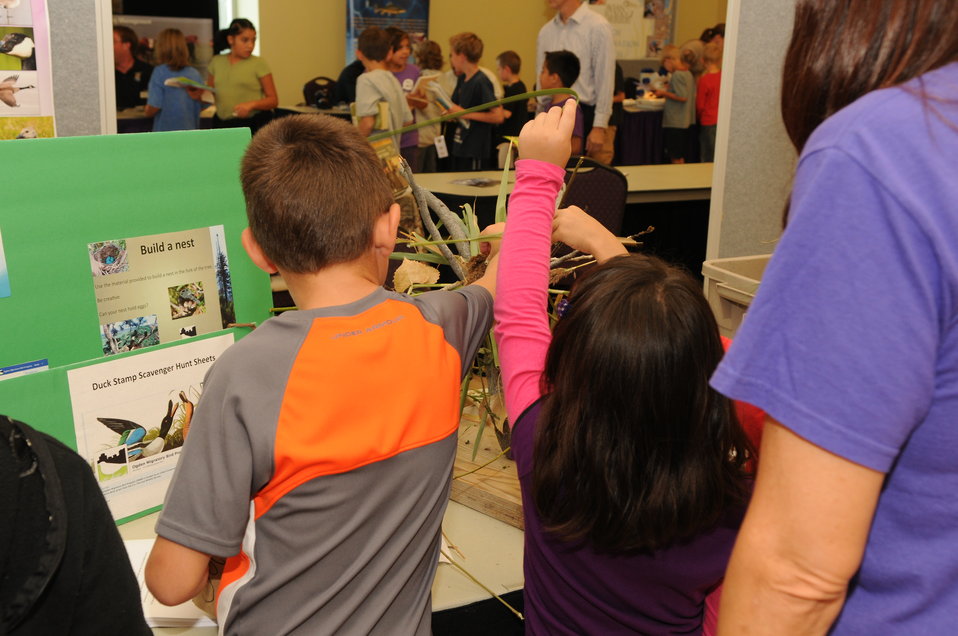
Youth Outreach

The U.S. Fish & Wildlife Service sponsored the 2012 Federal Duck Stamp Art Contest September 28 and 29 in Ogden, Utah, at Weber State University. A panel of five judges was responsible for choosing the art work used to design the 2013-2014 Migratory Bird Hunting and Conservation Stamp.